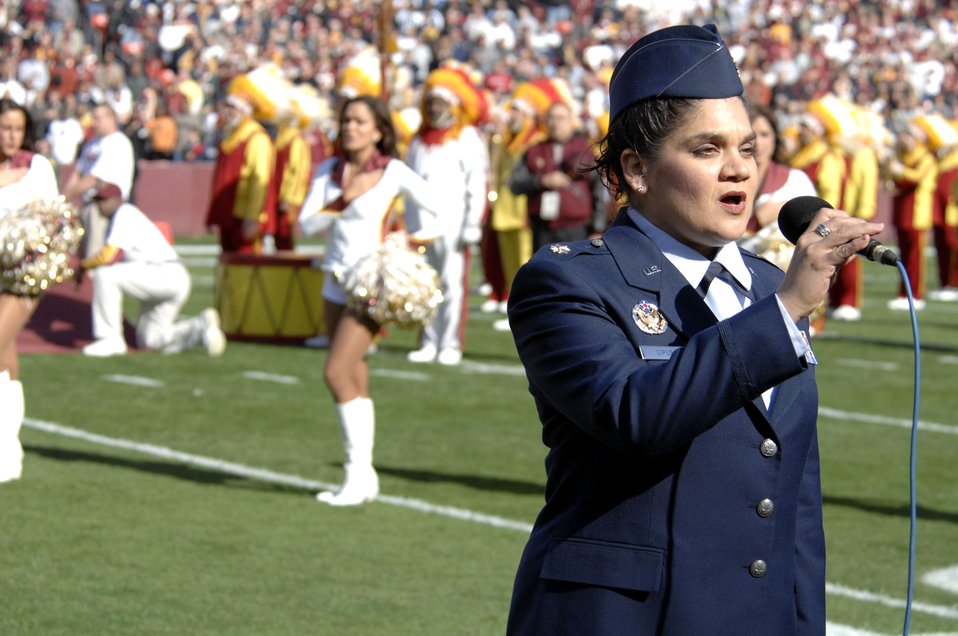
NFL hosts Air Force Appreciation Day

Maj. Kat Strus of the Air Force District of Washington sings the National Anthem during Air Force Appreciation Day at FedEx Field in Landover, Md., on Nov. 5. As part of the festivities prior to the National Football League game between the Washington Redskins and the Dallas Cowboys, Secretary of the Air Force Michael W. Wynne presented Purple Hearts to two Soldiers and officiated the coin toss. Four F-22 Raptors from Langley Air Force Base, Va., flew over the field during the National Anthem.